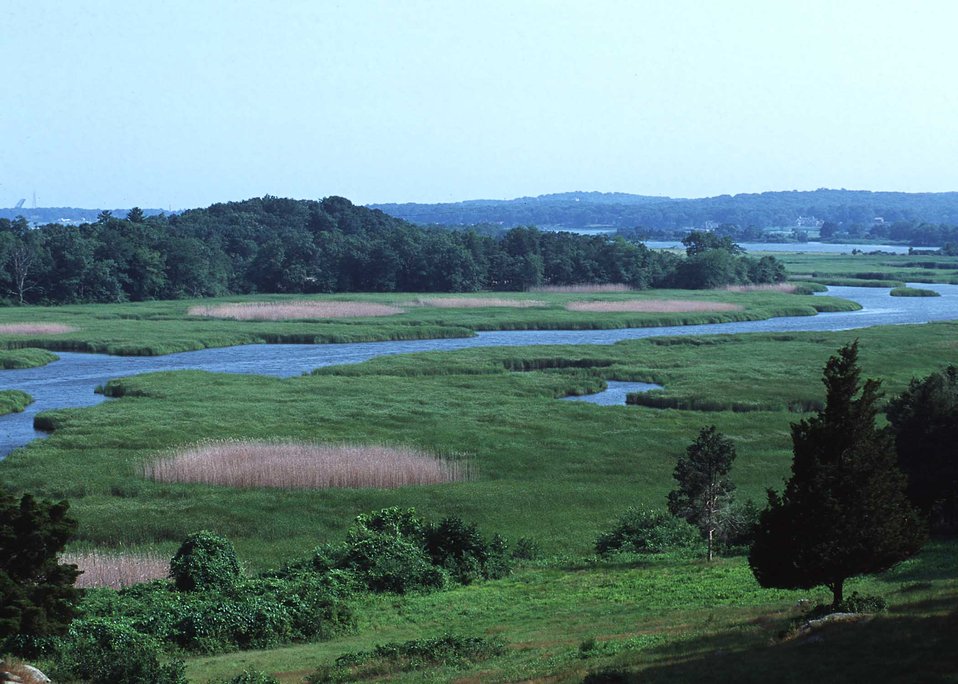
Connecticut River tideland habitat undergoing invasive plant control (light colored areas) and native plant community restoration.